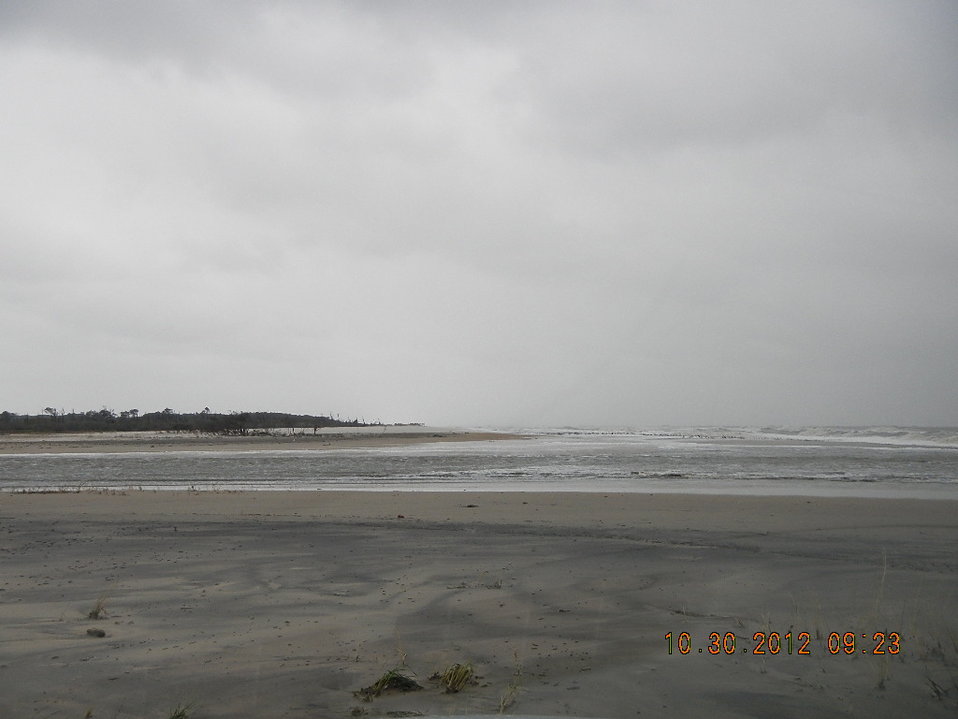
Hurricane Sandy hit Chincoteague National Wildlife Refuge (VA)

North of Parking Lot 1.